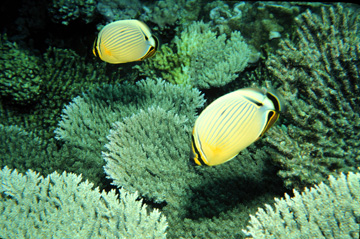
Butterfly fish - Pacific Remote Islands Marine National Monument